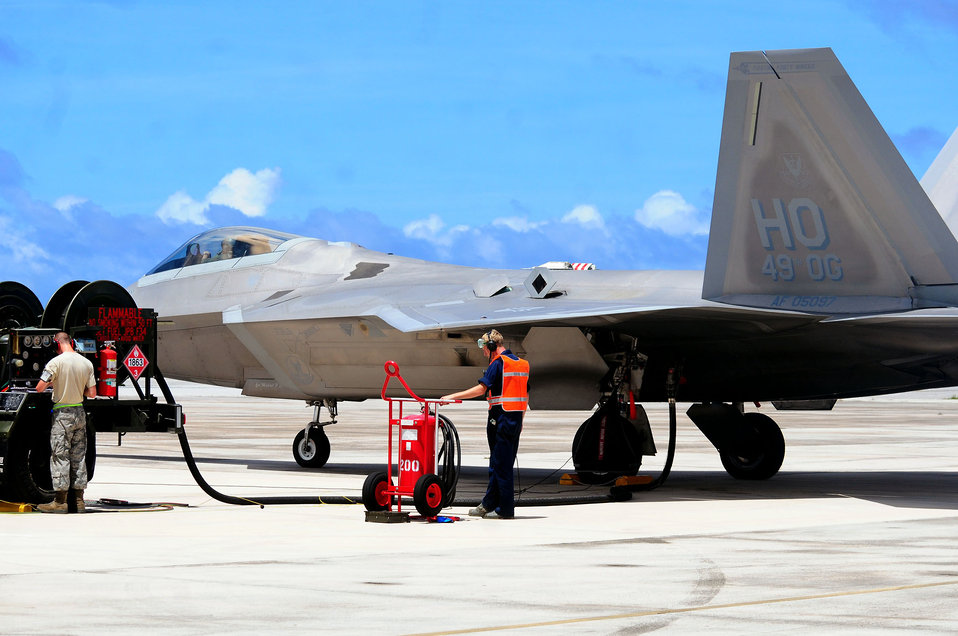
Andersen AFB Hosts Valiant Shield 2010

An F-22 Raptor is refueled during Valiant Shield 2010 Sept. 14, 2010, at Andersen Air Force Base, Guam.